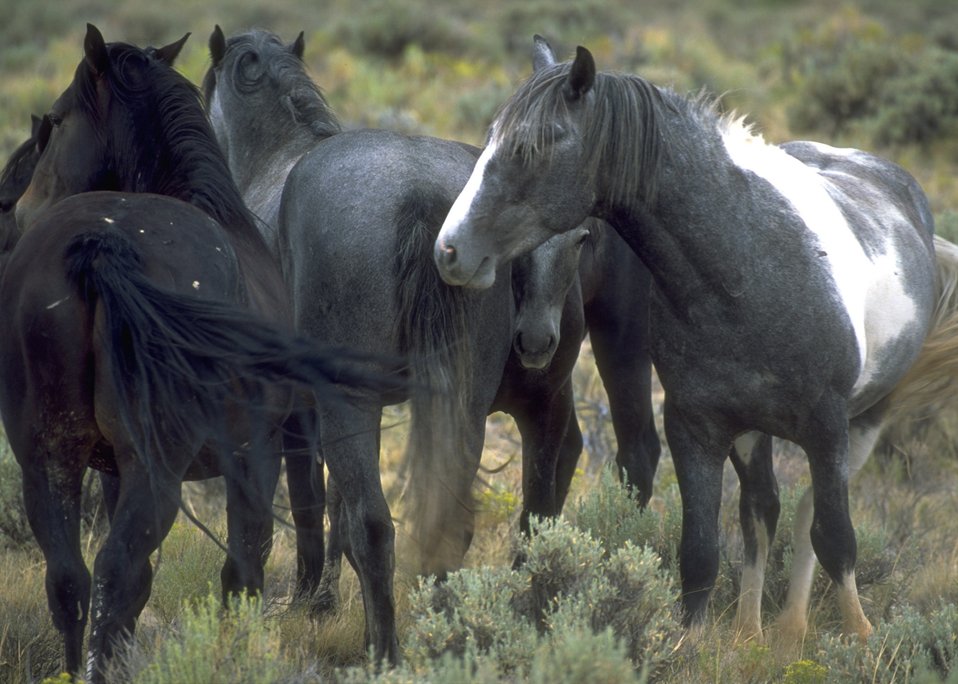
Wild horses, Rock Springs Field Office.